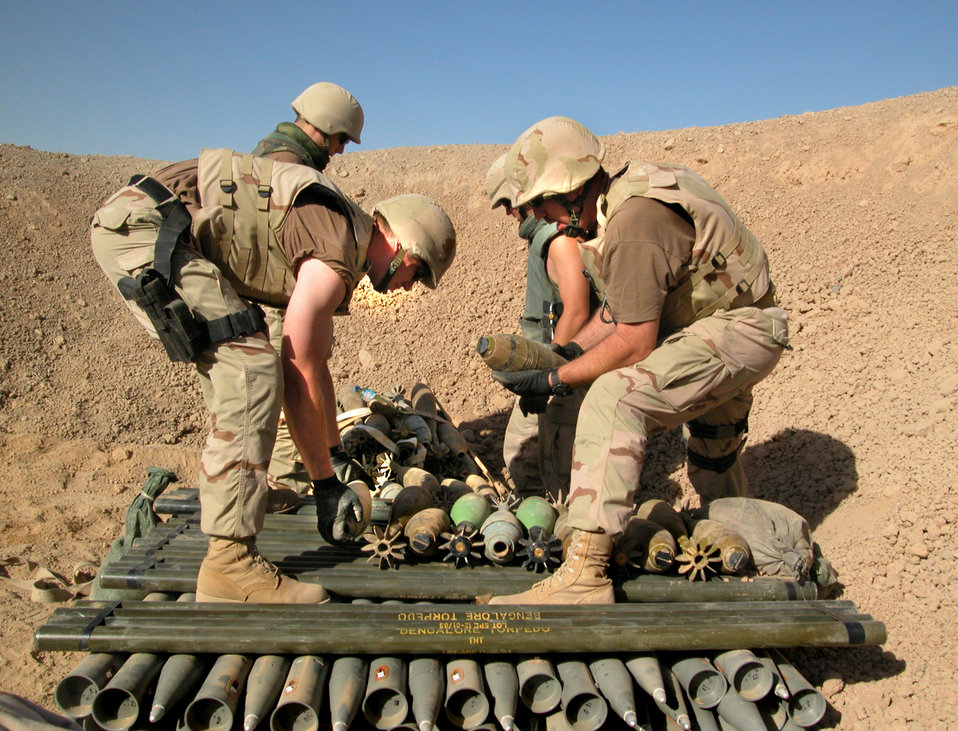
Airmen clean up Iraqi stockpile

KIRKUK, Iraq -- Staff Sgt. Justin Alonzo (left) and Master Sgt. Dale Griffin work with explosive ordnance disposal technicians from Latvia to prepare Iraqi high-explosive mortar shells, Bangalore torpedoes and 122 mm surface-to-surface rockets for demolition. Alonzo and Griffin are EOD technicians deployed to nearby Kirkuk Air Base.